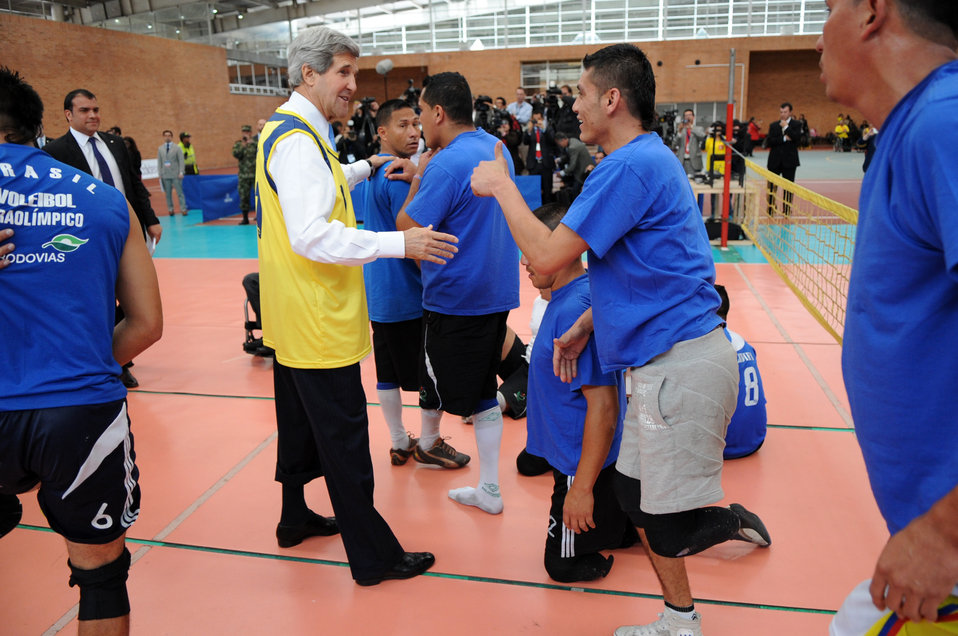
Secretary Kerry Meets With Wounded Veteran Volleyball Players

U.S. Secretary of State John Kerry greets a wounded veteran after watching a game of seated volleyball during a visit to the Coldeportes Center in Bogota, Colombia, on August 12, 2013.